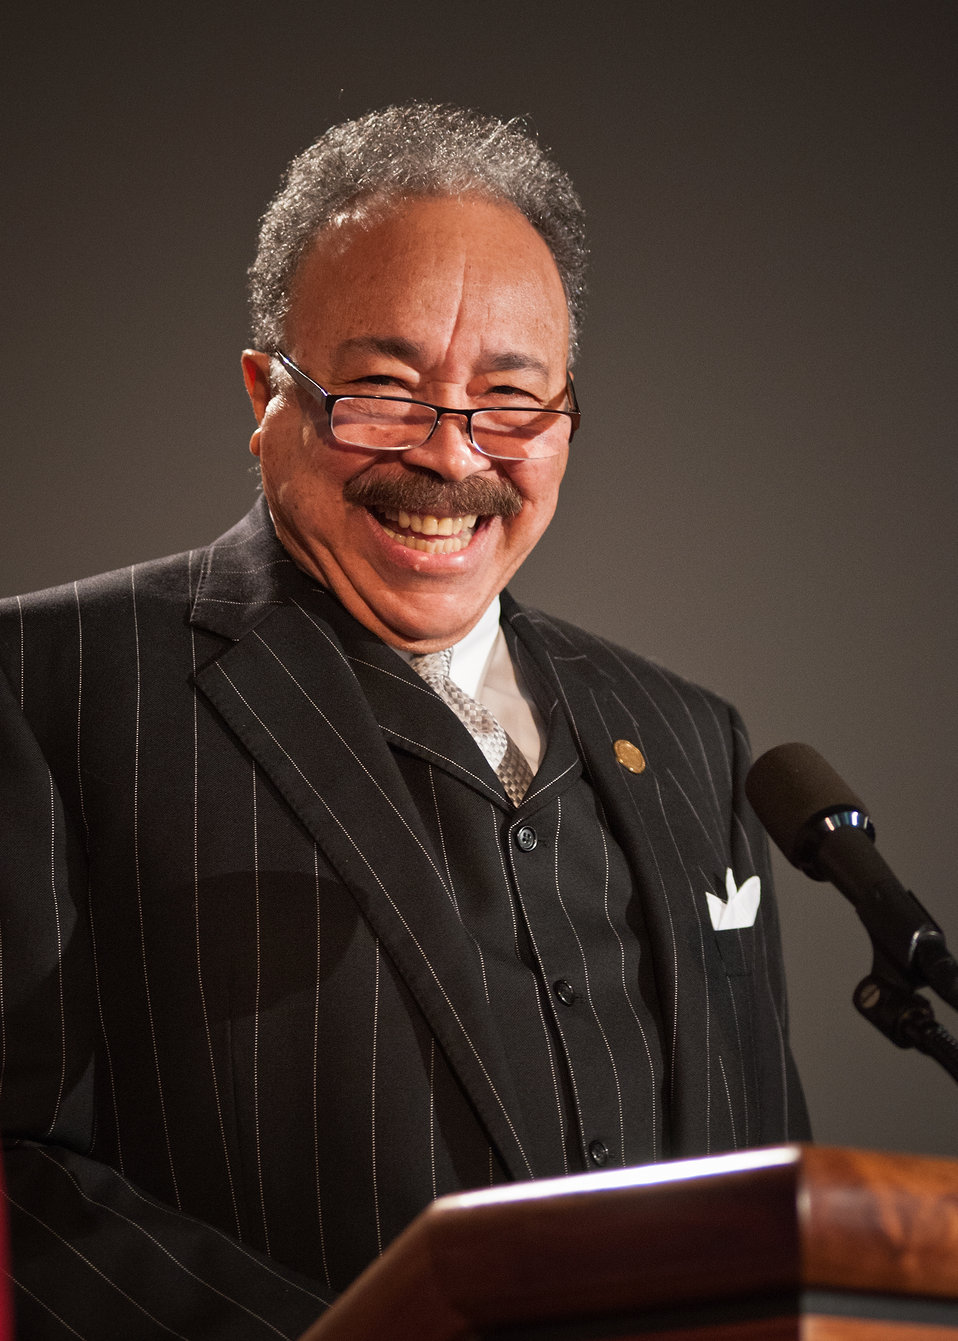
Dr. William R. Harvey, President, Hampton University, Hampton, Virginia addresses employees and visitors at the National Service Day and Martin Luther King Celebration in honor of Dr. Martin Luther King Jr.’s contributions to the Civil Rights Movement at the United States Department of Agriculture in Washington, D.C., on Thursday, January 12, 2012. Dr. Harvey spoke of Dr. King’s life and struggles and how we as citizens can use those lessons to improve our lives and the lives of others by the simple act of service to others.